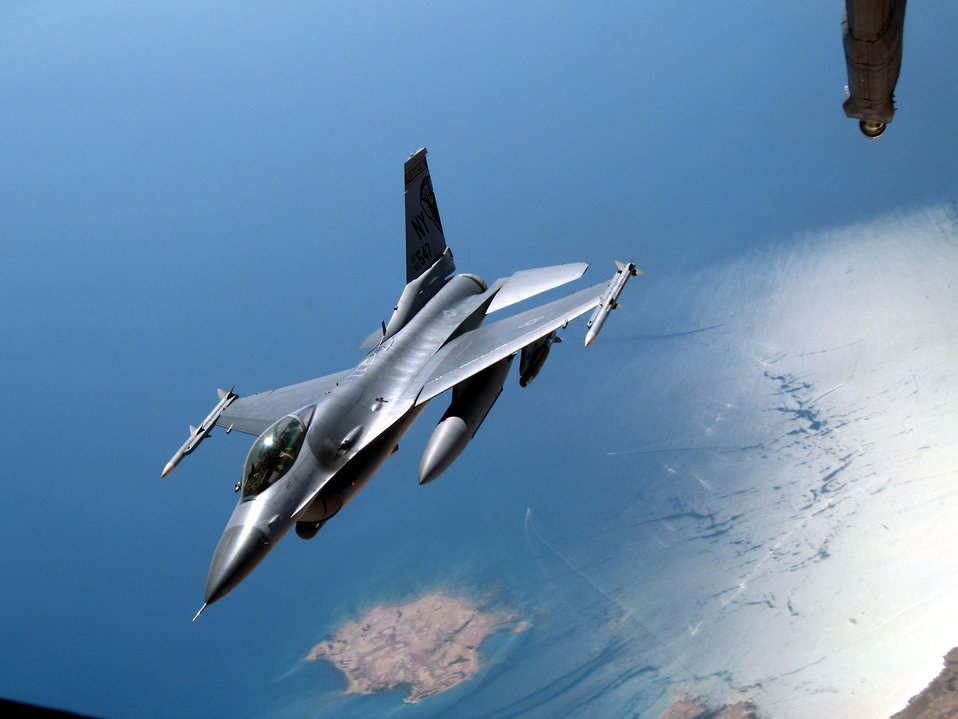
Filling up on freedom

A New York Air National Guard F-16 Fighting Falcon peels off after receiving fuel from a KC-10 Extender Oct. 17 over Southwest Asia. Aircraft from the 908th Expeditionary Air Refueling Squadron, including the KC-10 and KC-135 Stratotanker, provide fuel for coalition aircraft missions for Operations Iraqi Freedom and Enduring Freedom. The squadron is attached to the 380th Air Expeditionary Wing, the largest air refueling wing in Southwest Asia.